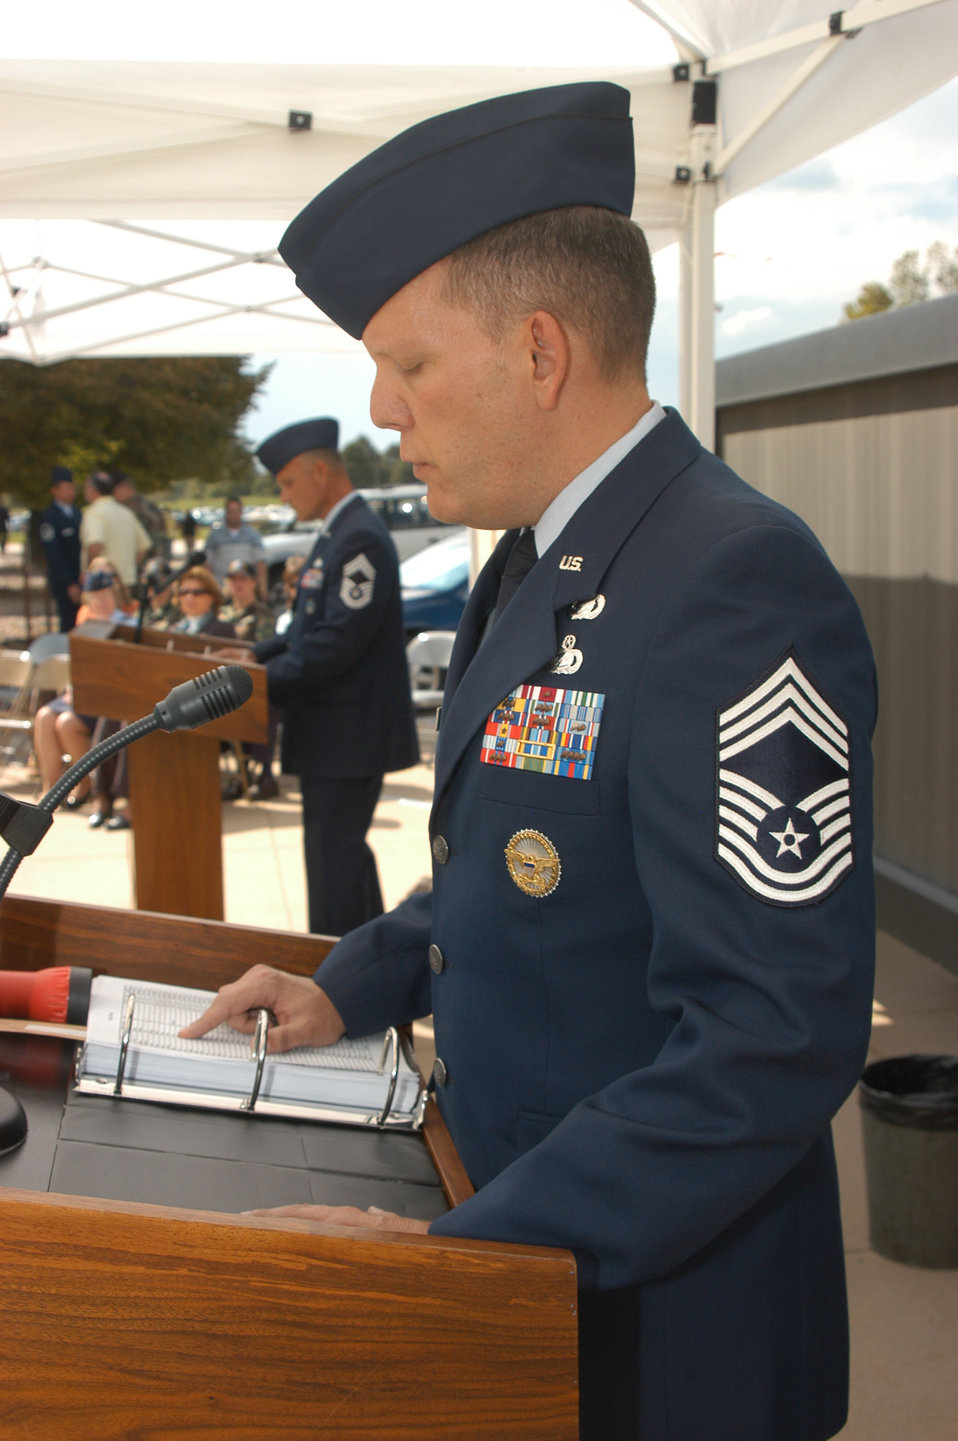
Denver-area units hold POW/MIA Recognition Day vigil

Chief Master Sgt. Arthur Engelbrecht reads the names of servicemembers missing or taken prisoner at a Prisoner of War and Missing in Action remembrance ceremony in Denver Sept. 14. The reading of names continues from 3 p.m. Sept. 14 through 3 p.m. Sept. 15, and is an annual ceremony in honor of National POW/MIA Recognition Day. Chief Engelbrecht is assigned to Air Reserve Personnel Center.